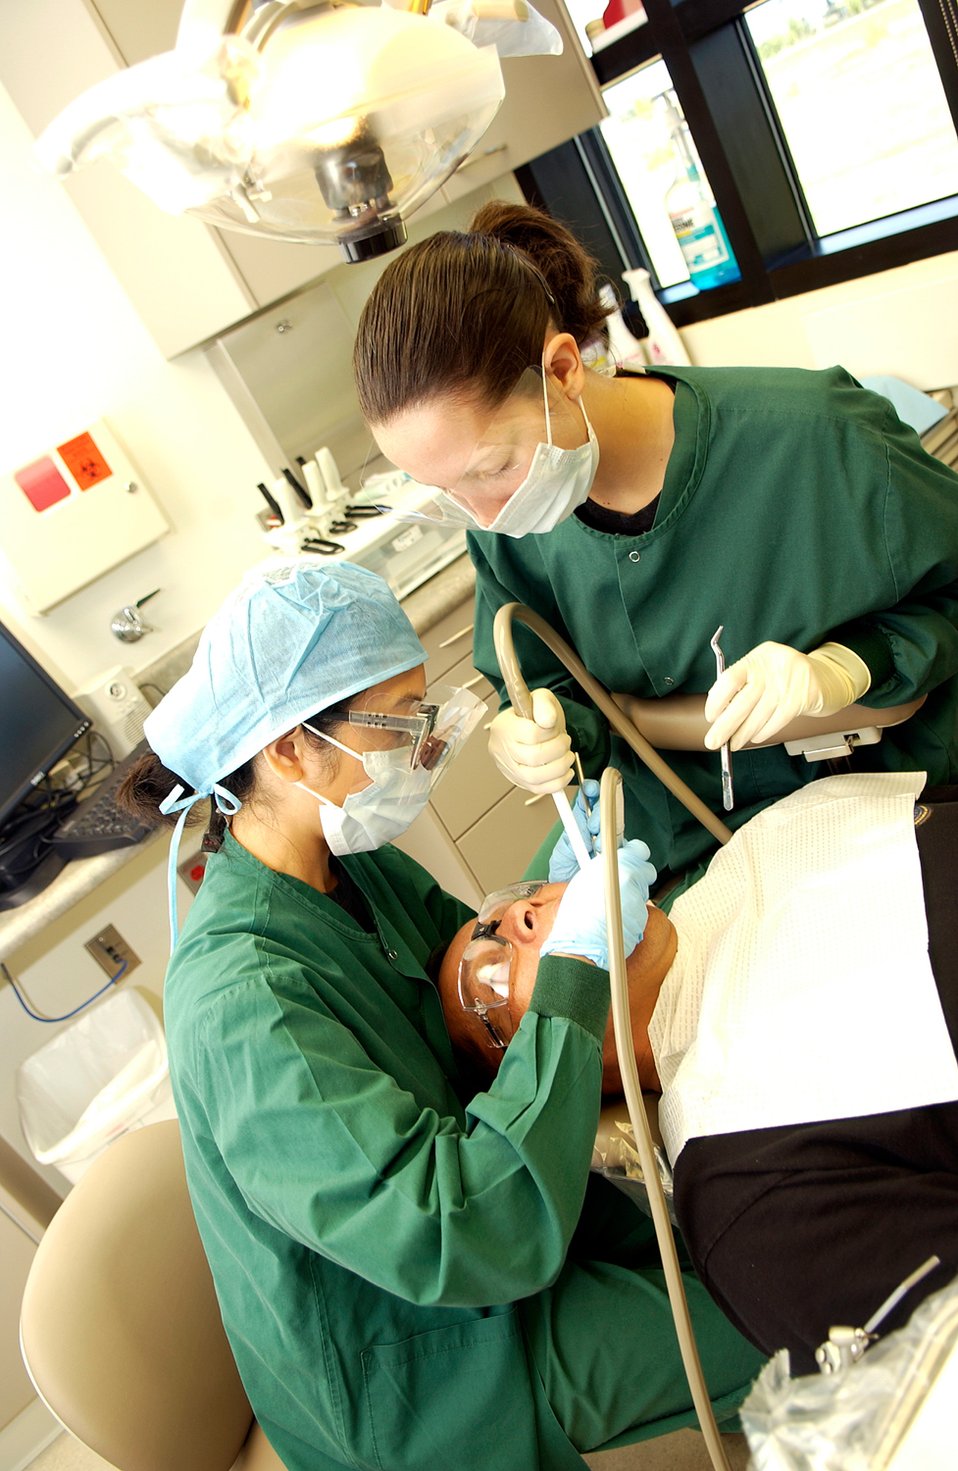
Andersen small dental clinic of the year

Maj. Elizabeth Kutner and Senior Airman Summer Arnold perform dental work on a patient. Both are assigned to the 36th Medical Operations Squadron. The dental clinic received the Air Force Small Dental Clinic of the Year Award for 2006.